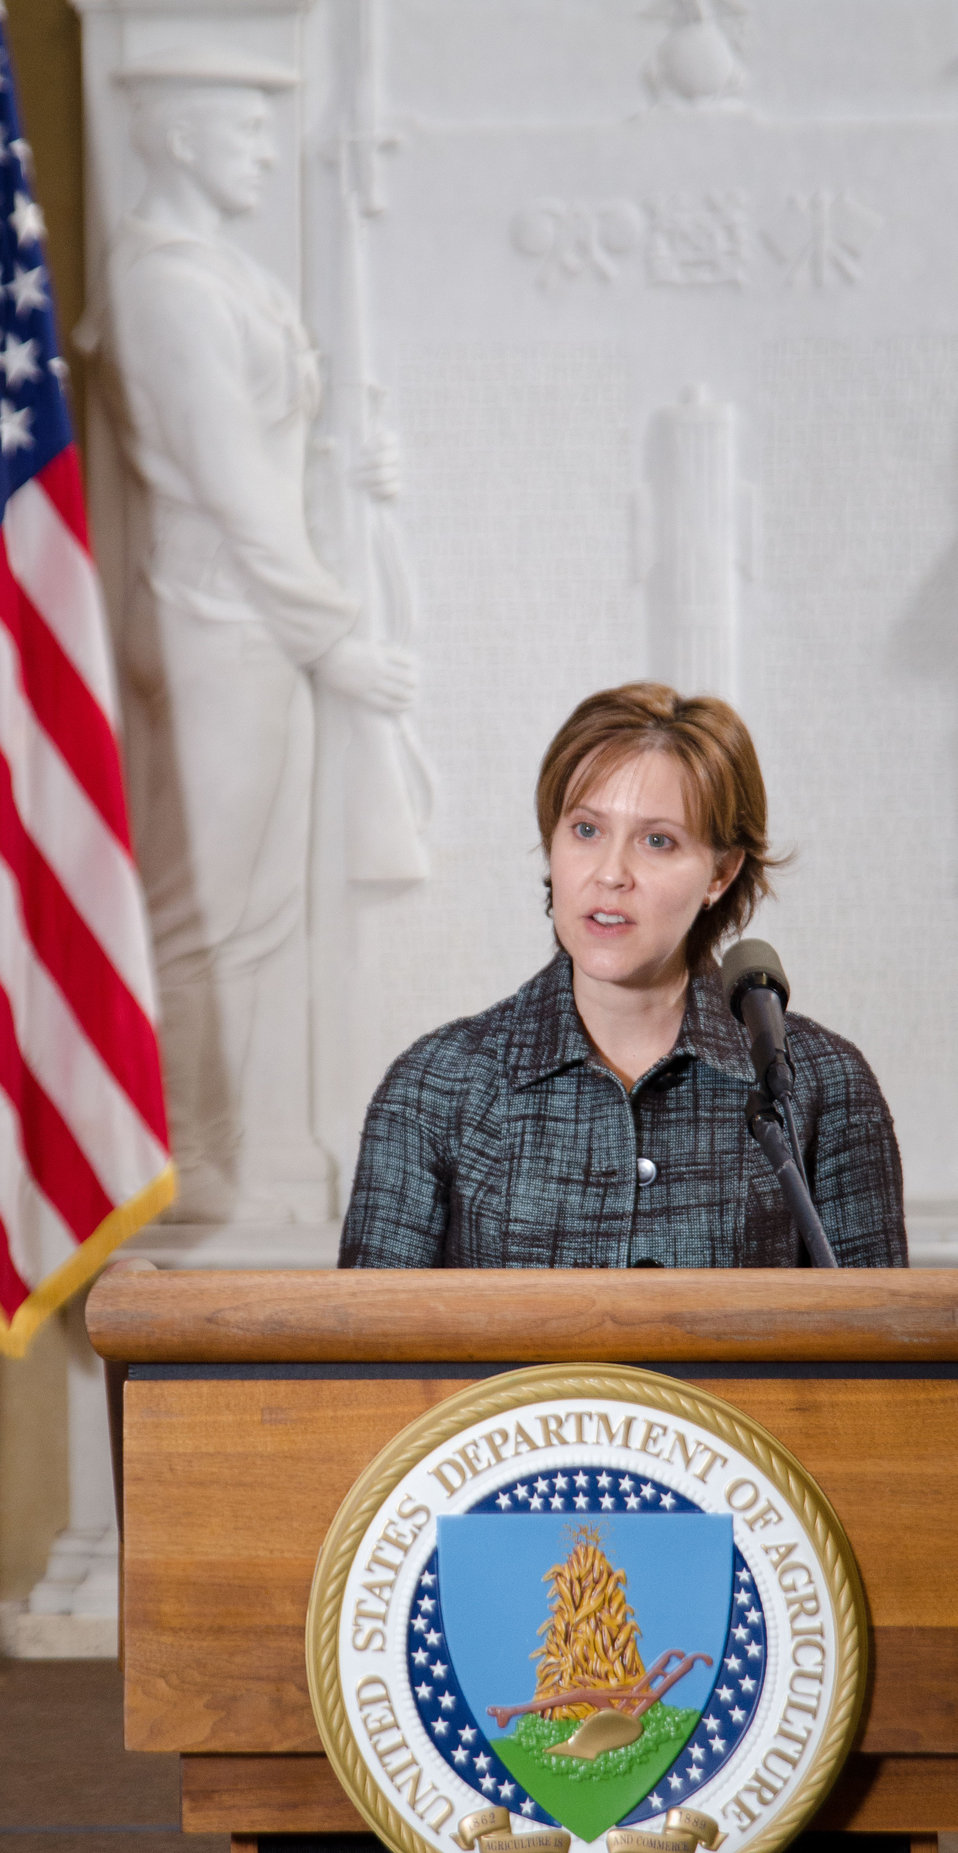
Agriculture Deputy Under Secretary Farm and Foreign Agricultural Services Darci Vetter was the keynote speaker for the U.S. Department of Agriculture (USDA), Foreign Service Oath of Office Ceremony for Agriculture Foreign Service Officers, in Washington, D.C., on Thursday, March 15, 2012.